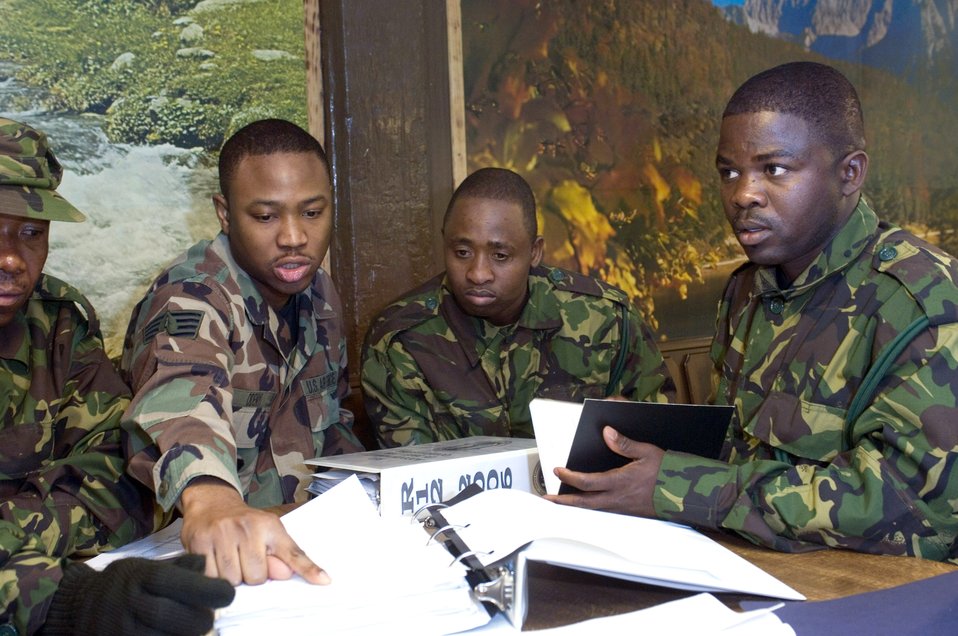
Botswana Defense Force visit

RAMSTEIN AIR BASE, Germany (AFPN) -- Staff Sgt. Bamidele Odeniyi (left) explains inventory procedures and operations to Lance Corporals Joel Sefako and Bathoeng Keakwala from the Botswana Defense Force during their visit to the 435th Logistics Readiness Squadron.